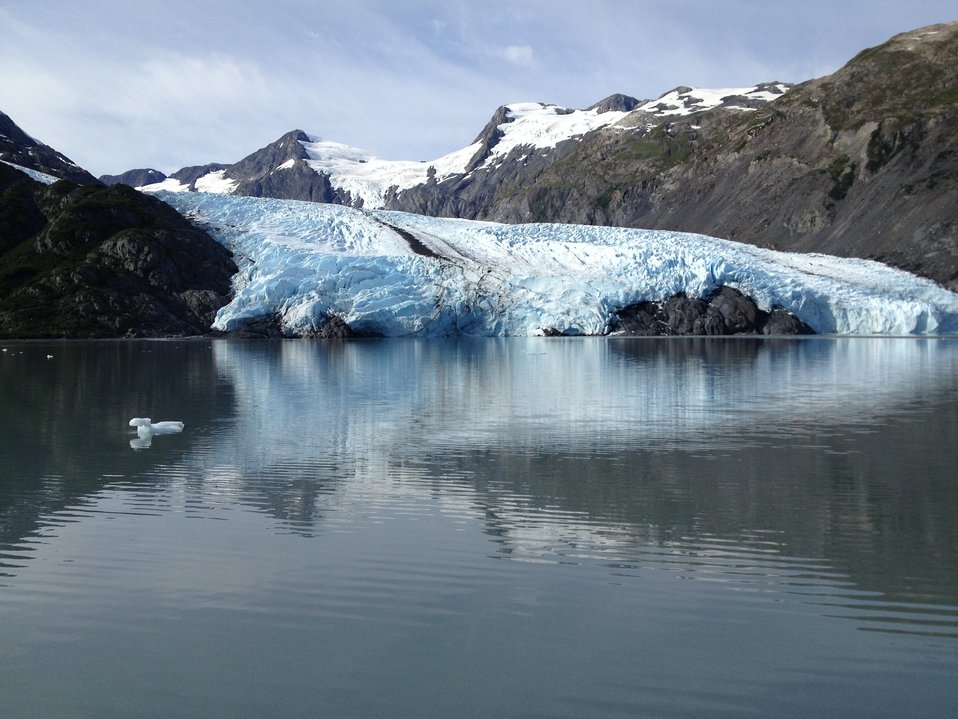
Administrator Gina McCarthy at Portage Lake Glacier, Alaska

On Monday, August 26 Administrator McCarthy visited the Portage glacier near Anchorage, Alaska to see first-hand some of the impacts of climate change.